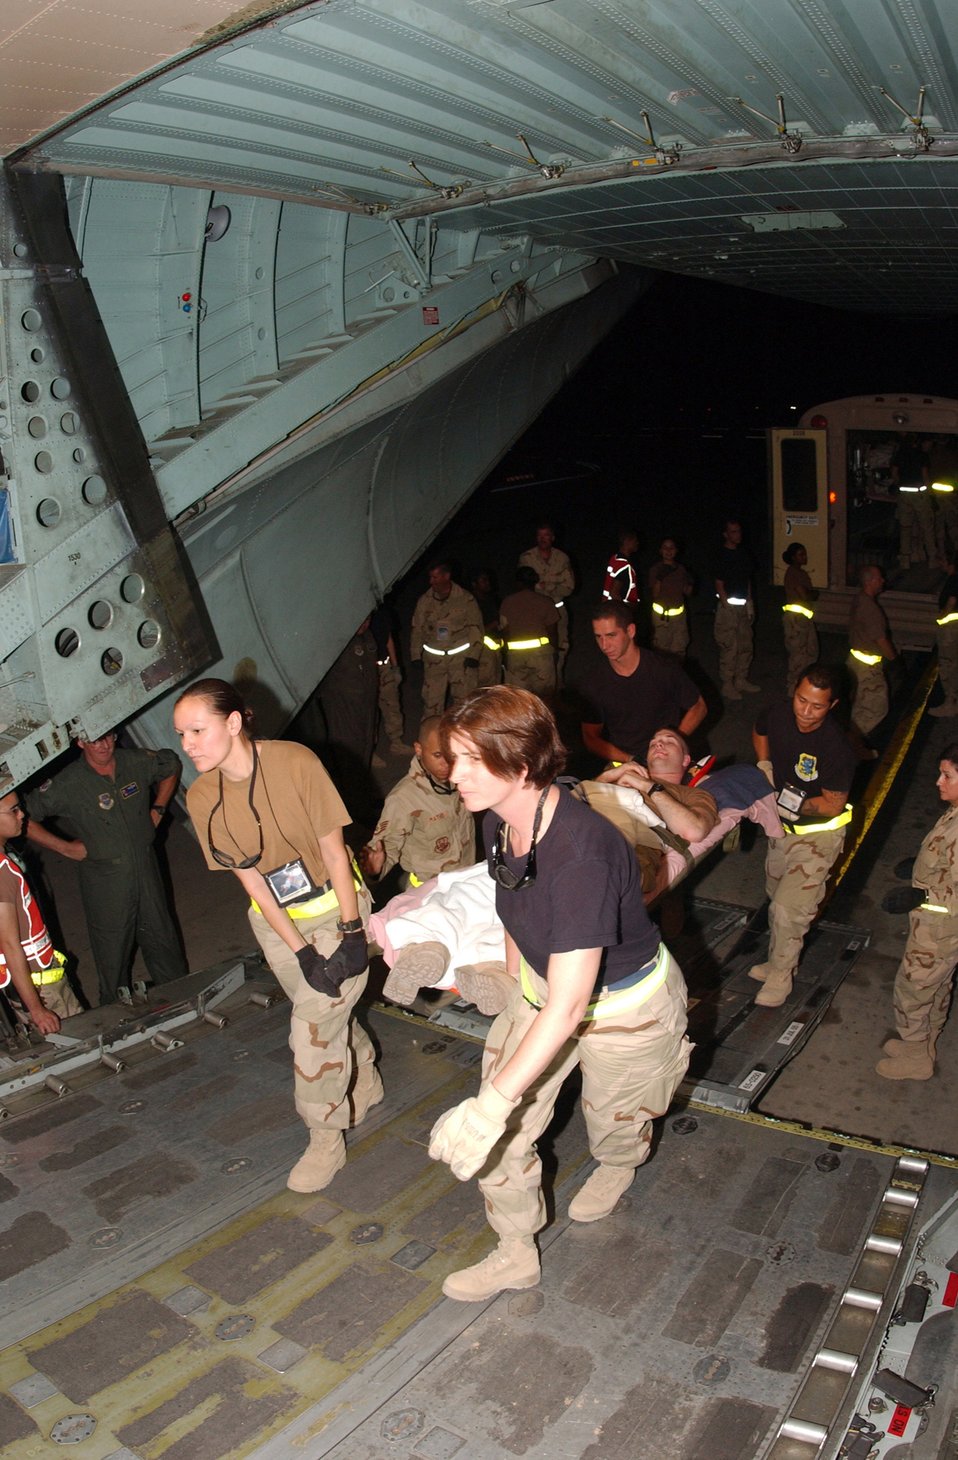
Aeromedical evacuation process key to saving lives in Iraq

BALAD AIR BASE, Iraq -- (From left) Airman 1st Class Debra Camacho, Staff Sgt. Fred Mathis, Tech. Sgt. Marsha Madsen, Senior Airman Bradley Cross and Staff Sgt. Raymond Wrentmore carry Navy Petty Officer 3rd Class Lorphy Bourque aboard a C-130 Hercules to fly him to Ramstein Air Base, Germany. The Airmen are assigned to the 332nd Air Expeditionary Wing here.